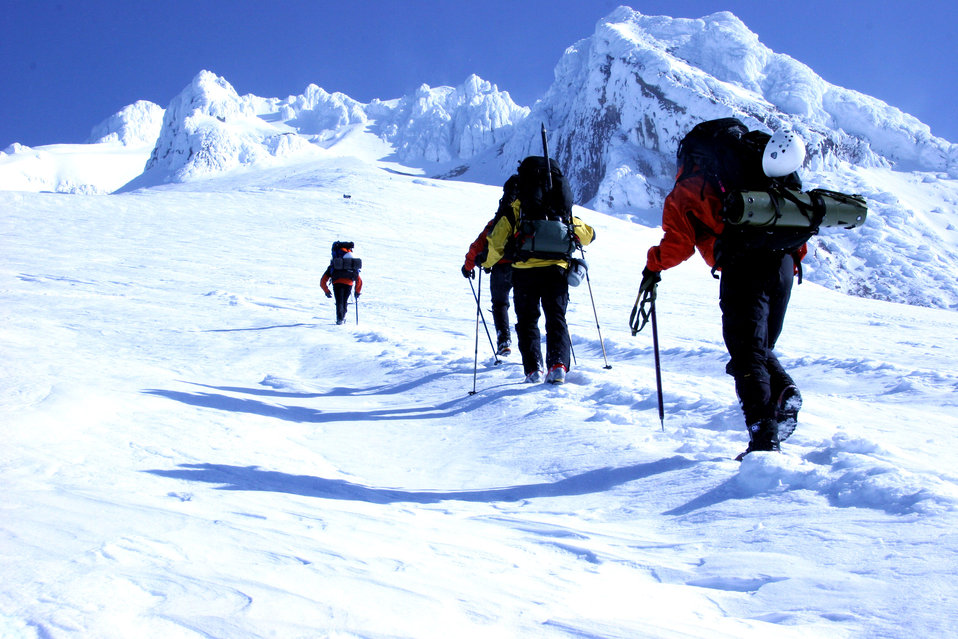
Joint exercise tests reservists' skills

(Left to right) Master Sgts. Scott Light and Eric Giacchino, Tech. Sgt. John Davis and Capt. Quintin Nelson use ice axes and walking poles while searching for two